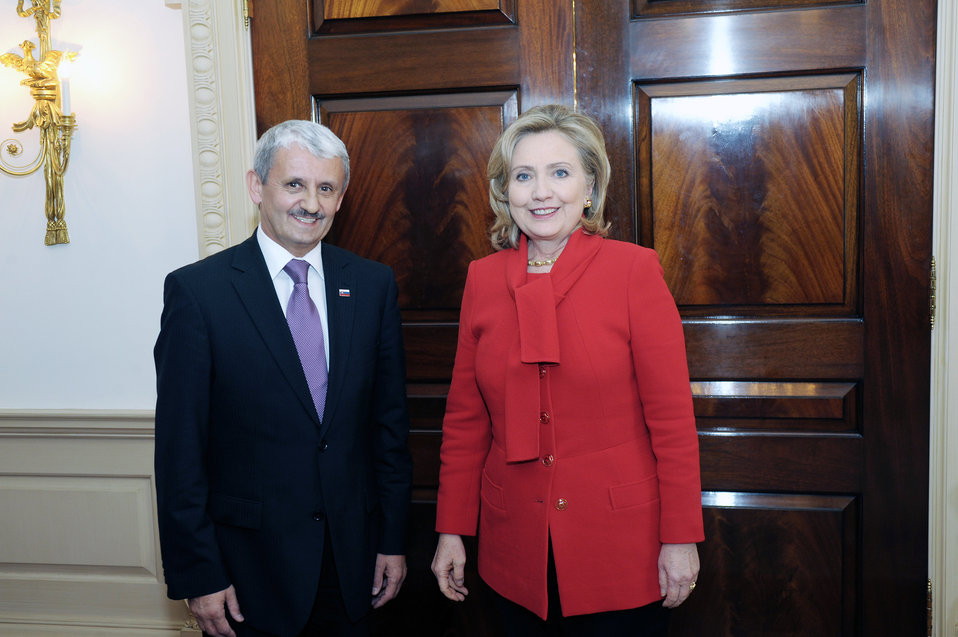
Secretary Clinton Poses for a Photo With Slovakian Foreign Minister Dzurinda

U.S. Secretary of State Hillary Rodham Clinton poses for a photo with Slovakian Foreign Minister Mikulas Dzurinda at the U.S. Department of State in Washington, D.C., on October 19, 2010.